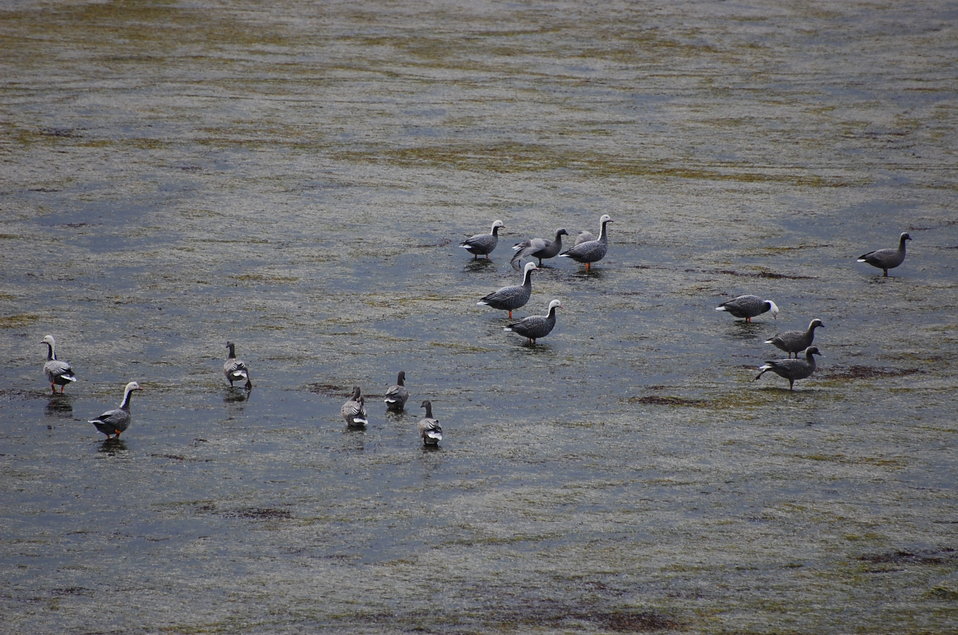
Emperor Geese

Izembek National Wildlife Refuge